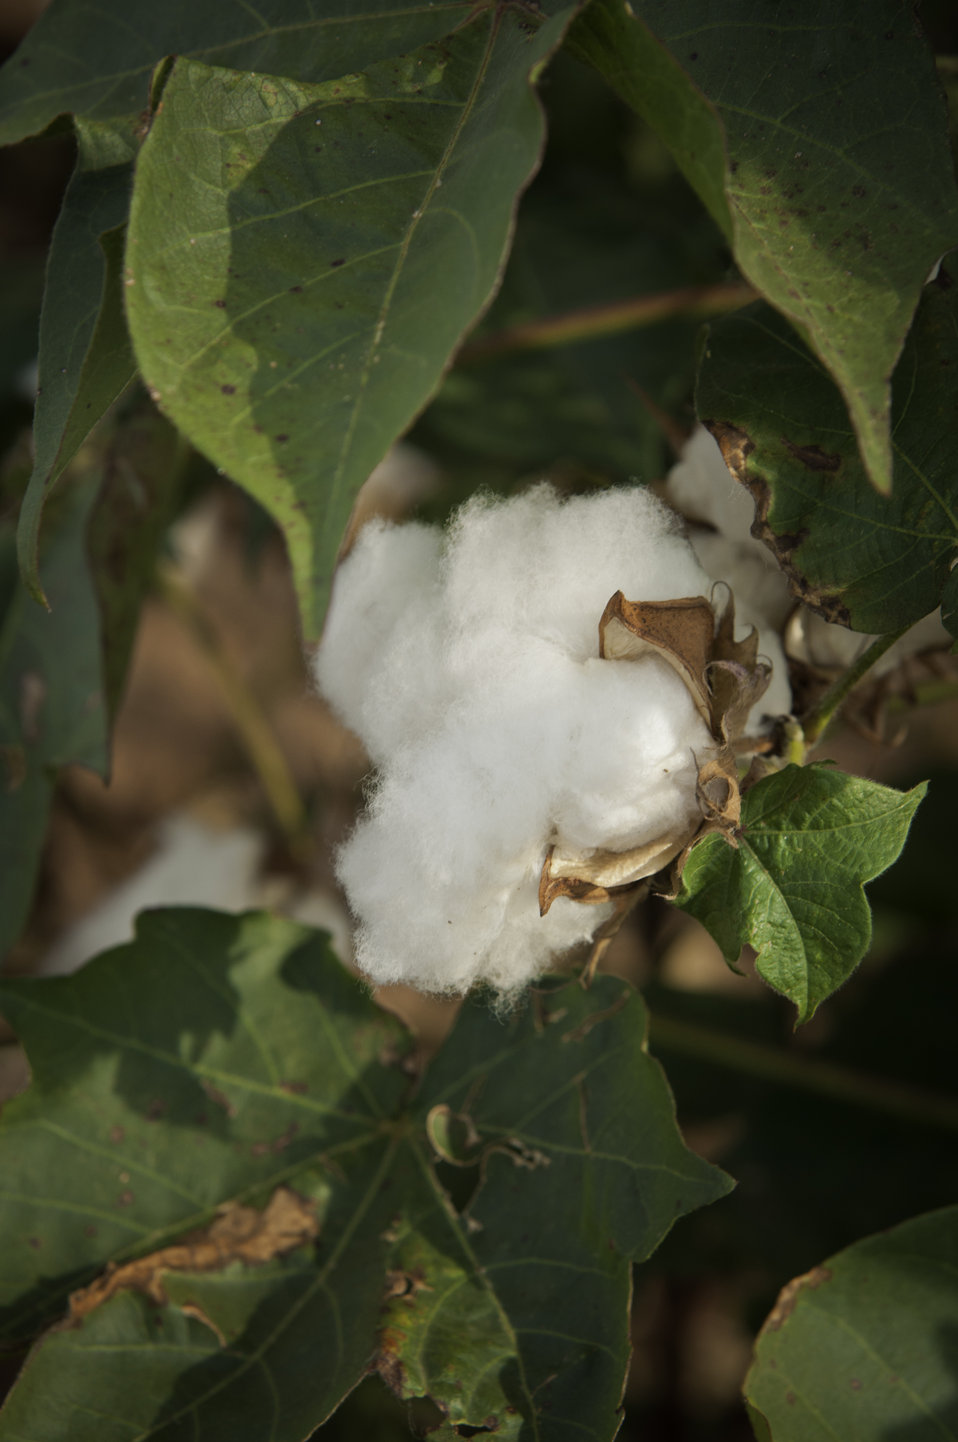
Irrigated cotton grows on a farm in Navasota, TX on Aug. 23, 2013.